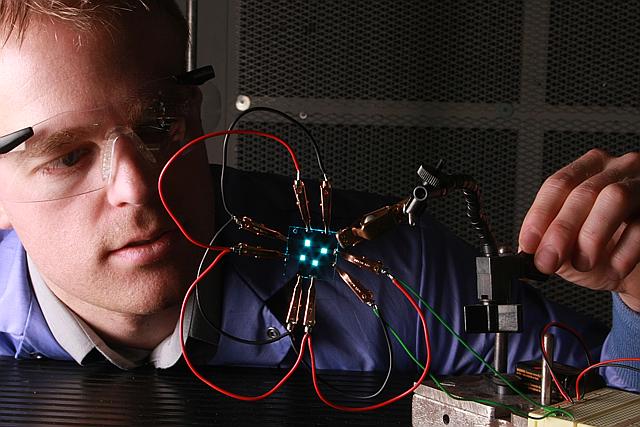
A Pacific Northwest National Laboratory research demonstrates the workings of a high-efficiency, charge-balance, blue phosphorescent organic light emitting device (OLED).

New, more efficient host materials for the blue phosphorescent OLED (pictured) have been designed, developed and tested by PNNL scientists. By using new host materials, scientists have been able to improve the efficiency by at least 25 percent and have unlocked doors to developing much efficient white OLEDs.